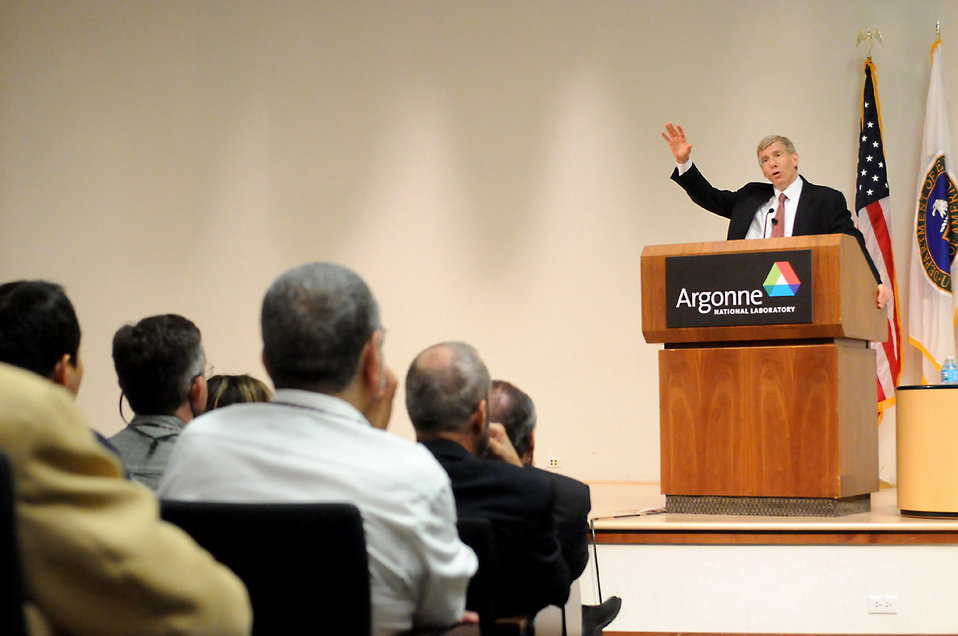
Deputy Secretary Poneman speaks to a full house

Deputy Secretary of Energy Daniel Poneman speaks to a full house at Argonne National Laboratory